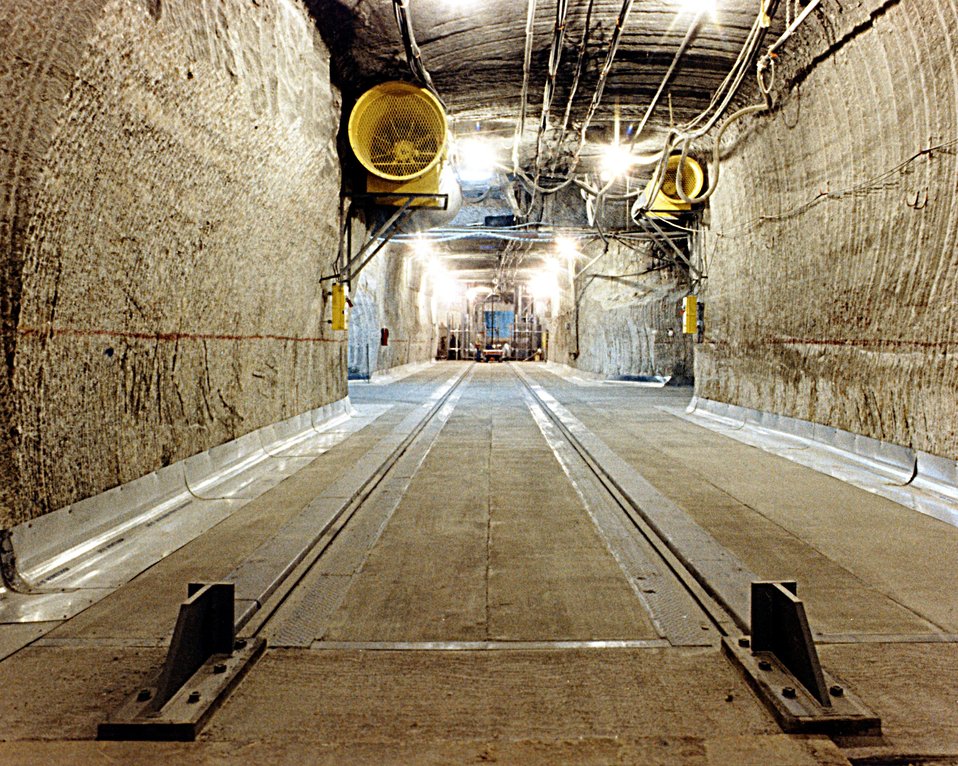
UNDERGROUND WASTE SHAFT STATION.

THE WASTE ISOLATION PILOT PLANT IS A DOE RESEARCH AND DEVELOPMENT FACILITY FOR DEMONSTRATING THE SAFE DISPOSAL OF TRANSURANIC RADIOACTIVE WASTES. TEST SHAFTS HAVE BEEN DRILLED TO A DEPTH OF 2,100 FEET. THE SHAFTS, ONE 6 FEET IN DIAMETER AND THE OTHER 12 FEET IN DIAMETER, PROVIDE AN ENTRY PASSAGE AND VENTILATION TO THE UNDERGROUND SALT ROCK FORMATION THAT IS BEING TESTED TO DETERMINE ITS SUITABILITY FOR RADIOACTIVE WASTE STORAGE.